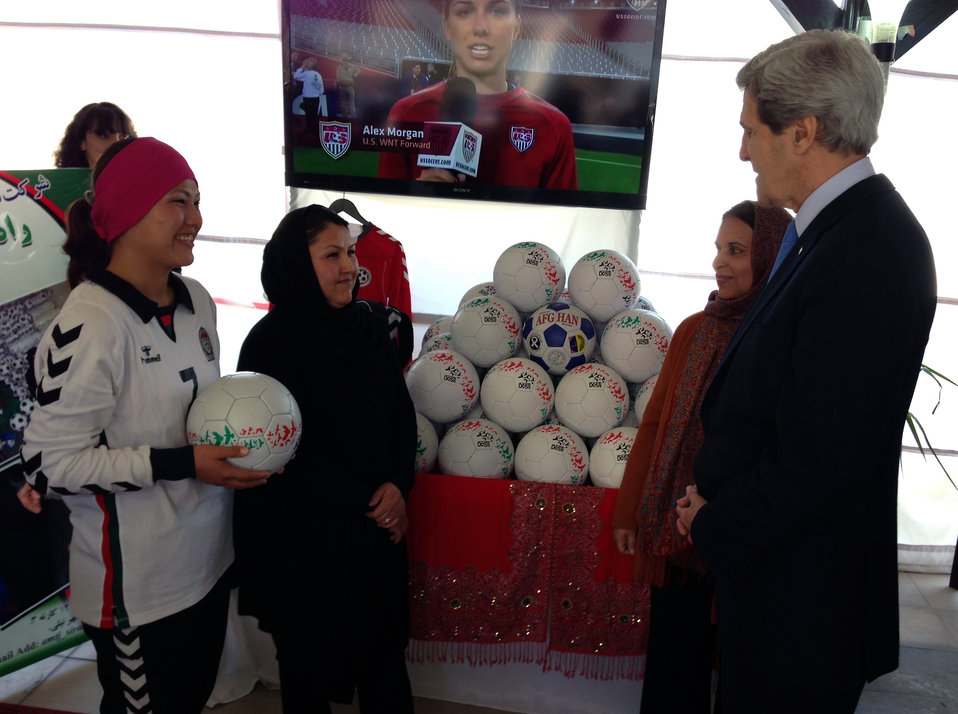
Secretary Kerry Tours the Women’s Entrepreneurship Showcase in Kabul

U.S. Secretary of State John Kerry visits with Zahra Mahmoodi and Amir Taj Sirat during a tour of local businesses in Kabul, Afghanistan on March 26, 2013.